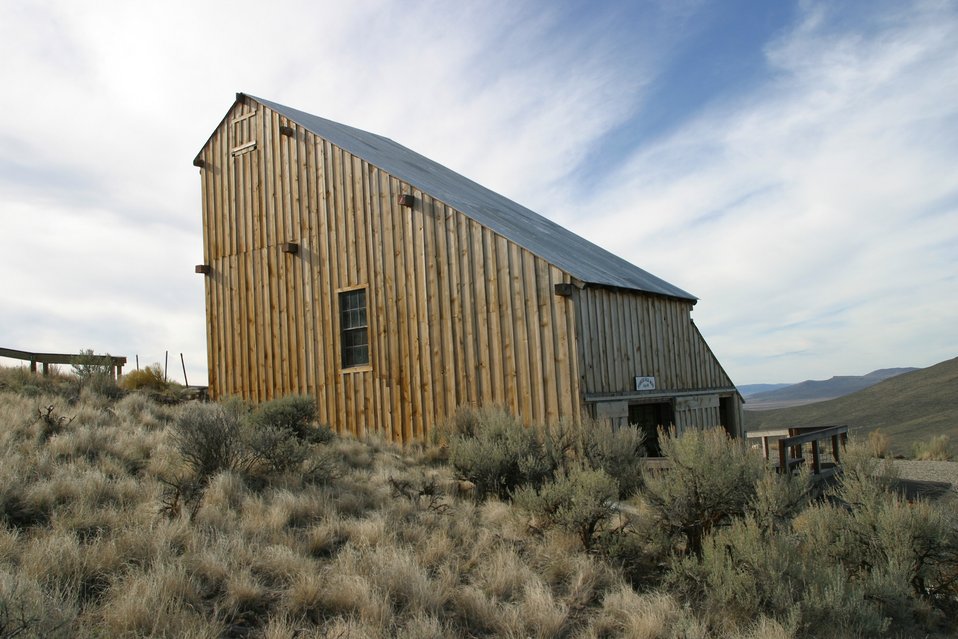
A replica of the Rabbit Mine 1926 stamp mill near Greenhorn in the Blue Mountains of eastern Oregon. It is used to interpret the importance of mining in western history, and the relationship of gold mining to the westward migration story.